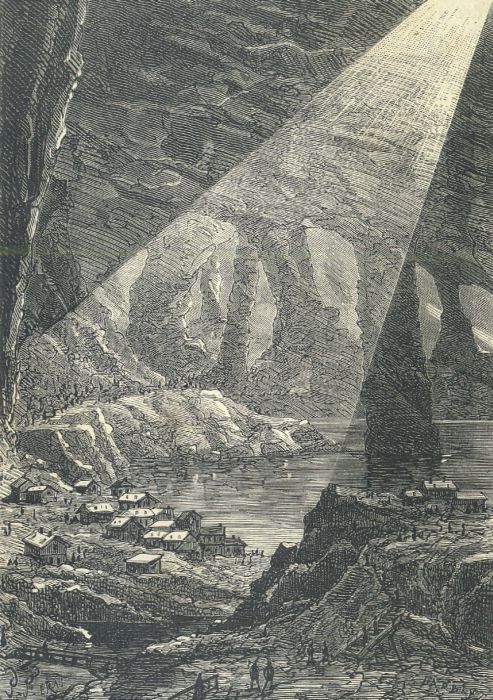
An illustration from the novel 'The Child of the Cavern' (alternative English titles for this novel include: Black Diamonds, Black Indies, Child of the Cavern, or Strange Doings Underground and The Underground City) by Jules Verne drawn by Jules Férat. Polski: Ilustracja powieści Juliusza Verne'a 'Czarne Indie' autorstwa Julesa Férata. Français : 'Les Indes noires', Jules Férat. Orginal description from the book: Français : Ces maisons de mineurs, construites en briques…